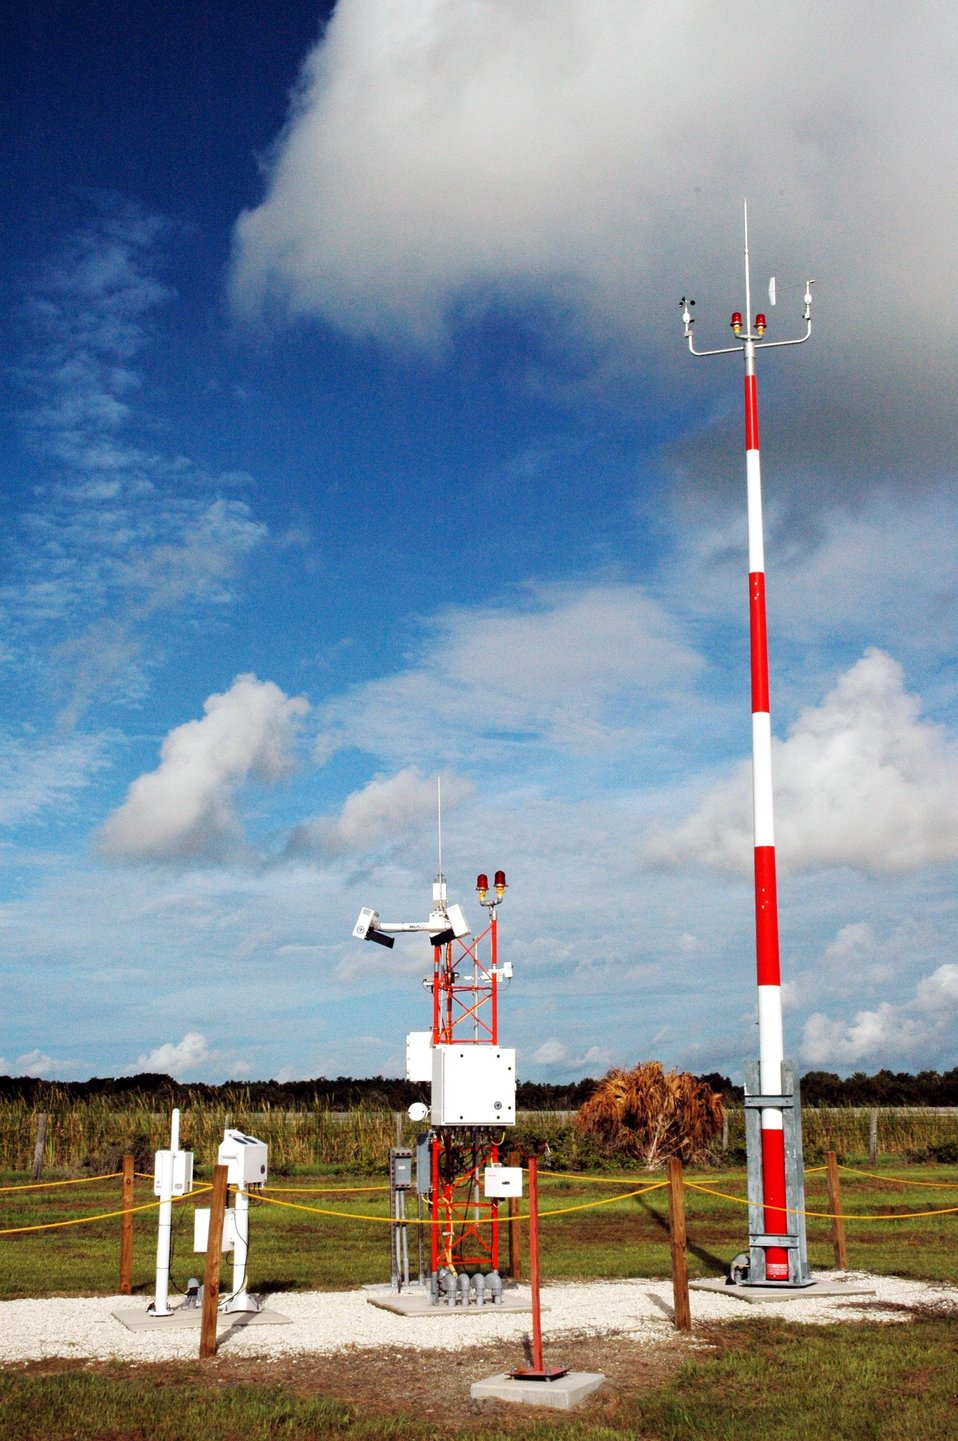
Automated Surface Observing System (ASOS) installation.